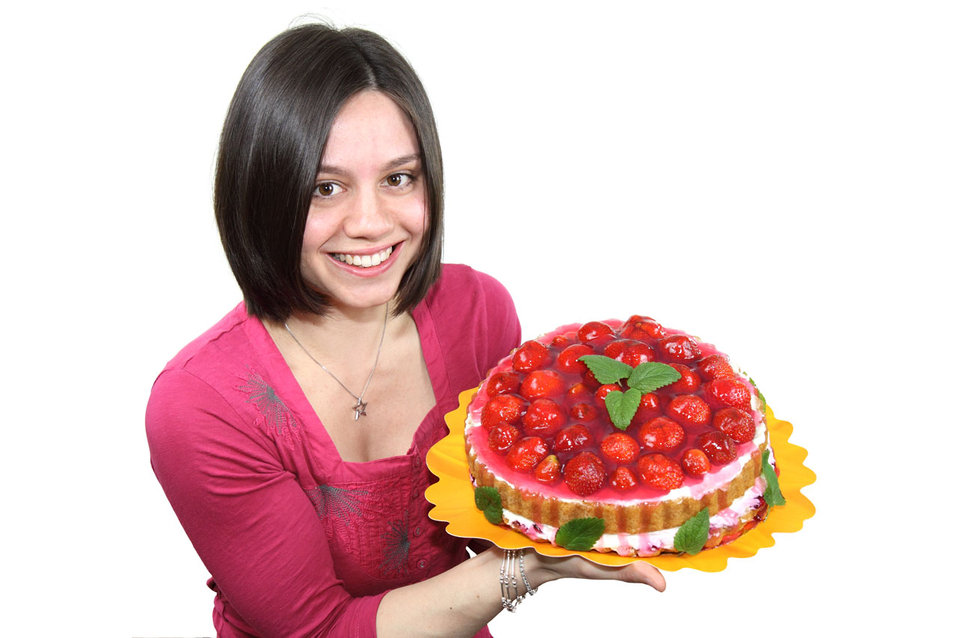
Young woman with cake

Smiling young woman holding a cake on white background.